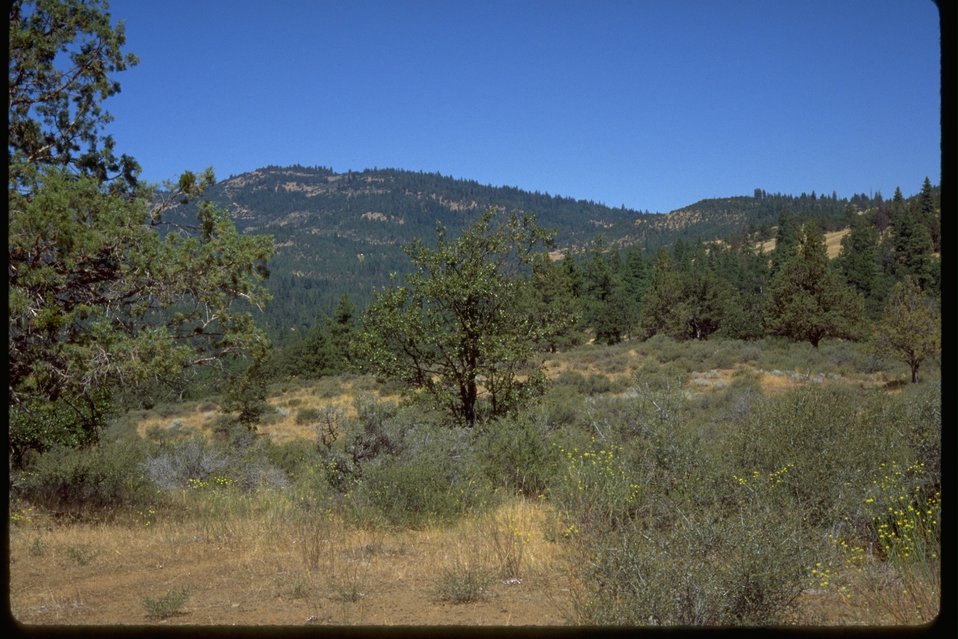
Agate Flats.